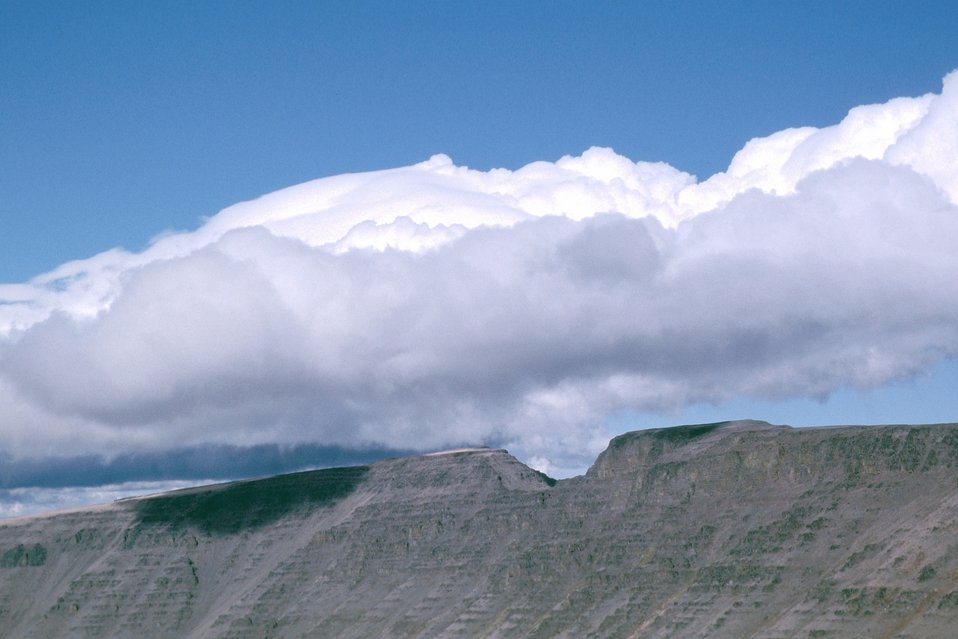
Clouds over Kiger Notch, Steen's Mountain.